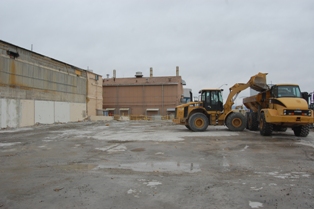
‘Chem Plant’ Decontamination and Decommissioning Advances at Idaho Site

Debris cleanup occurs at the facility CPP-630 in May.

Supported by additional funding under the Recovery Act, decontamination and decommissioning (D&D) crews at the Idaho Cleanup Project are ahead of schedule. By early next year, D&D will reduce by half the total historical footprint of the former “Chem Plant,” which represented the first generation of uranium reprocessing in the U.S. from 1954 to 1992.